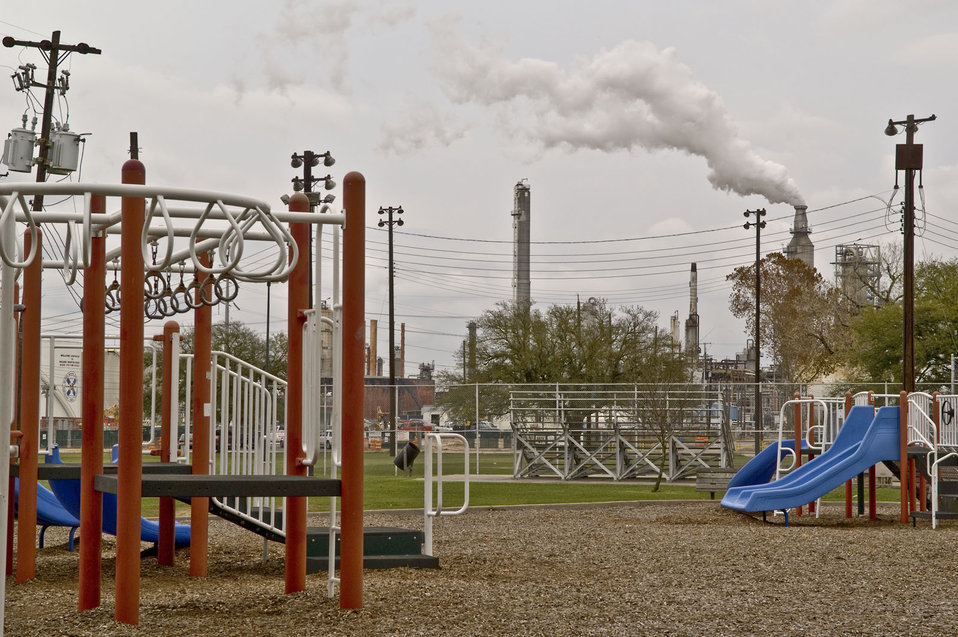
March, 2008 Protecting childrens health is a priority at EPA